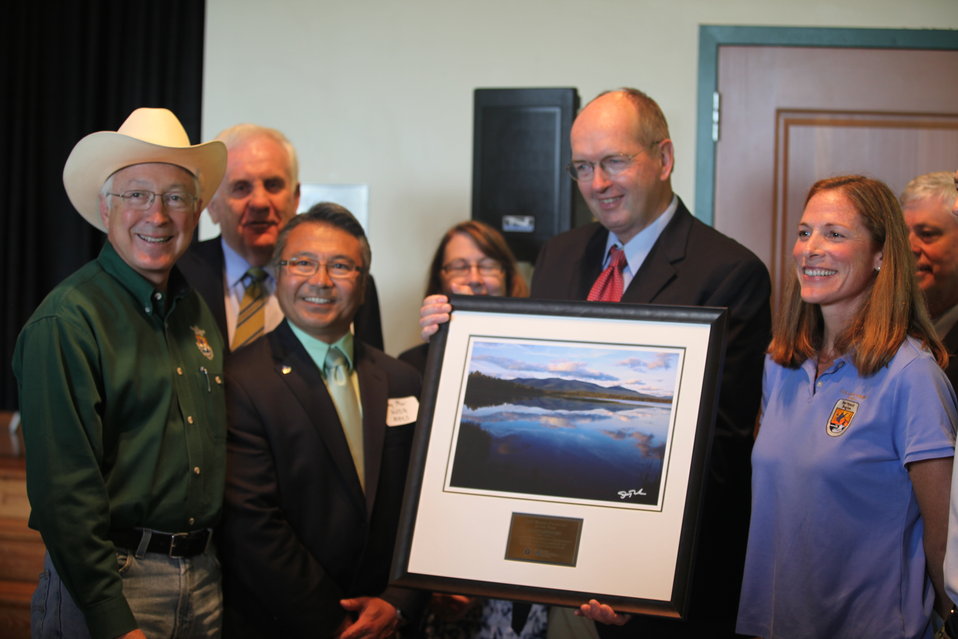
Refuge volunteer of the year

Secretary of the Interior Ken Salazar presents the 2012 National Wildlife Refuge Volunteer of the Year Award to David Govatski, a volunteer at the Silvio O. Conte National Fish & Wildlife Refuge.